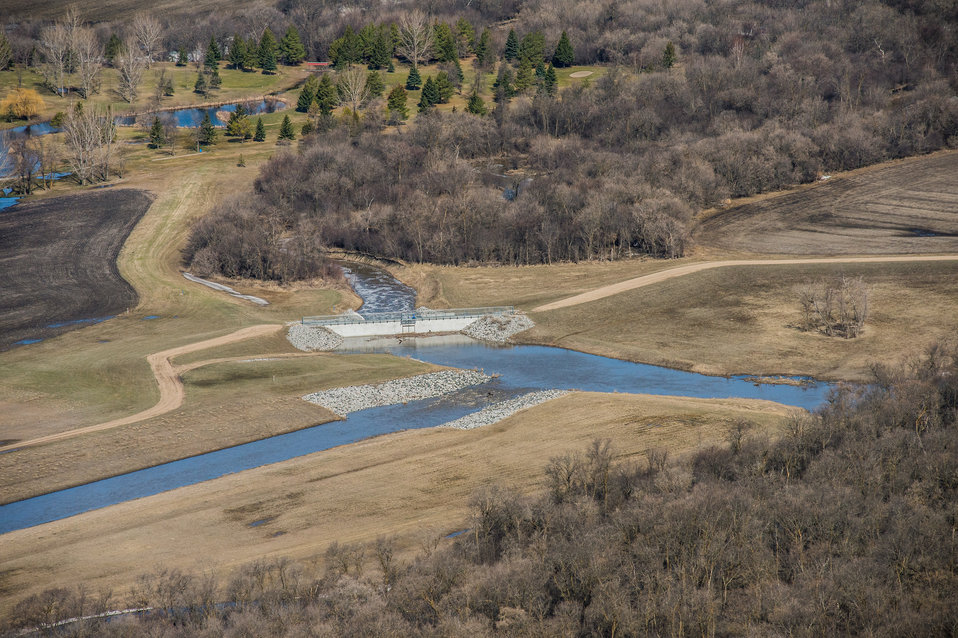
Snake River Diversion, a Public Law PL83-566 Small Watershed Program, at Warren, MN, on Wednesday, May 1, 2013. For information about this and other programs from the USDA Red River Basin Initiative (RRBI) please see www.mn.nrcs.usda.gov/news/features13/RRBI.html.